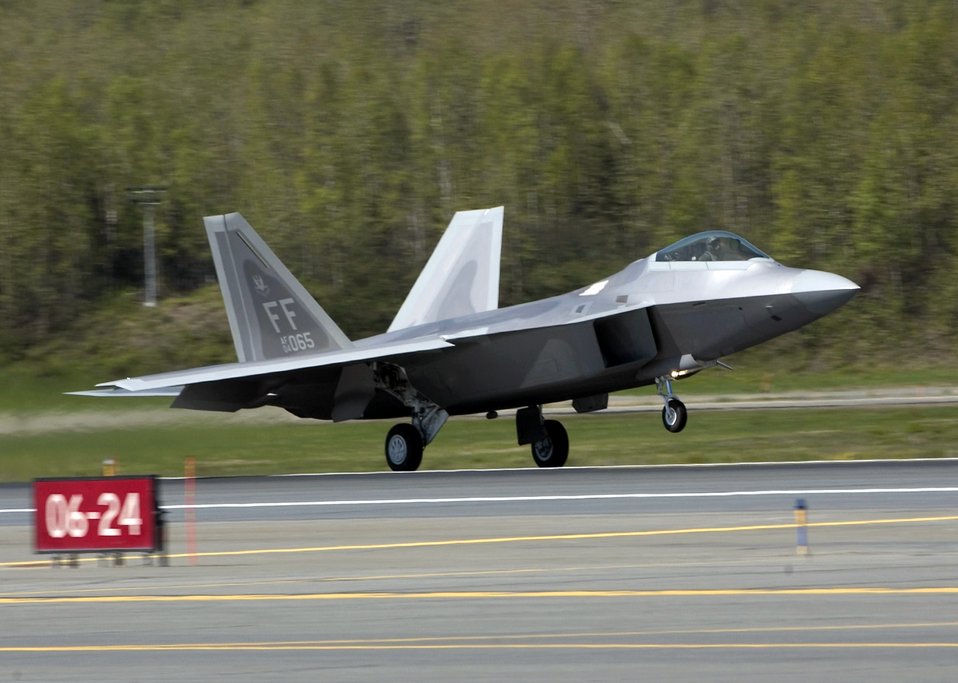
F-22s arrive at Elmendorf for exercise

An F-22 Raptor lands at Elmendorf Air Force Base, Alaska, on Tuesday, May 23, 2006. Raptors from the 27th Fighter Squadron at Langley AFB, Va., are supporting Exercise Northern Edge 2006. The Air Force selected Elmendorf as the home for the next operational F-22 squadron. The base will receive 36 Raptors, with the first jet expected in fall 2007.